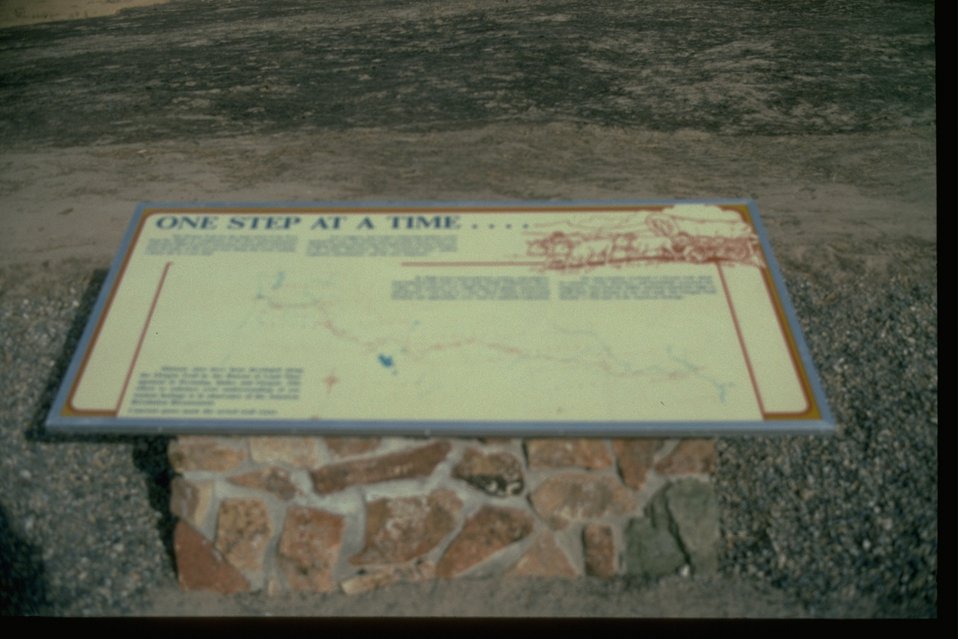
Panels of Oregon Trail site.